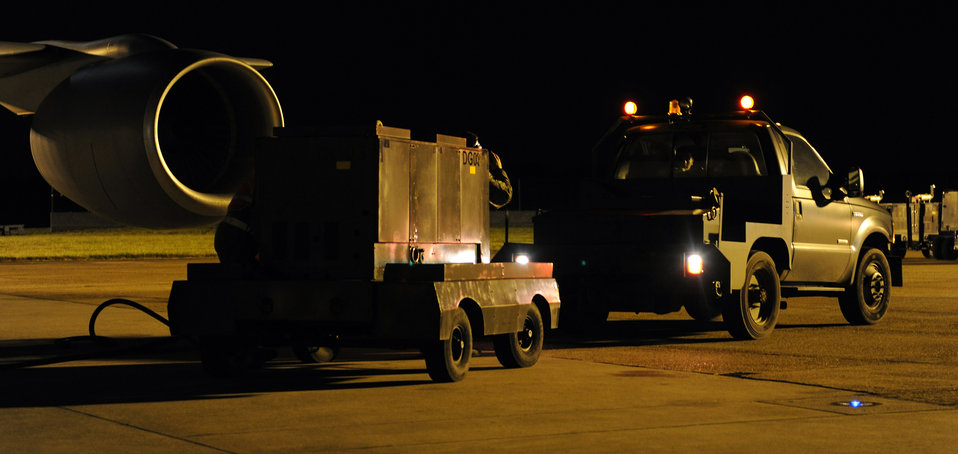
Joint Task Force Odyssey Dawn

110319-F-DE018-112 -- RAF MILDENHALL, England (March 19, 2011) -- Members of the 100th Aircraft Maintenance Squadron remove a power cart to allow a KC-135 Stratotanker to taxi for a refueling mission in support of Joint Task Force Odyssey Dawn. JTF Odyssey Dawn is the U.S. Africa Command task force established to provide operational and tactical command and control of U.S. military forces supporting the international response to the unrest in Libya and enforcement of United Nations Security Council Resolution (UNSCR) 1973. UNSCR 1973 authorizes